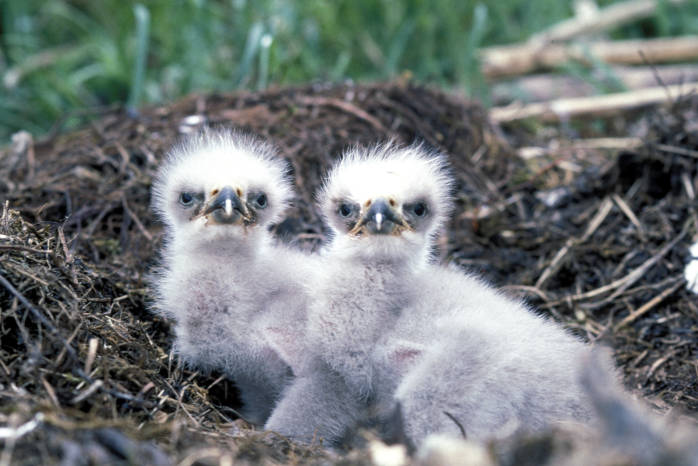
bald eagle chicks

Kodiak National Wildlife Refuge